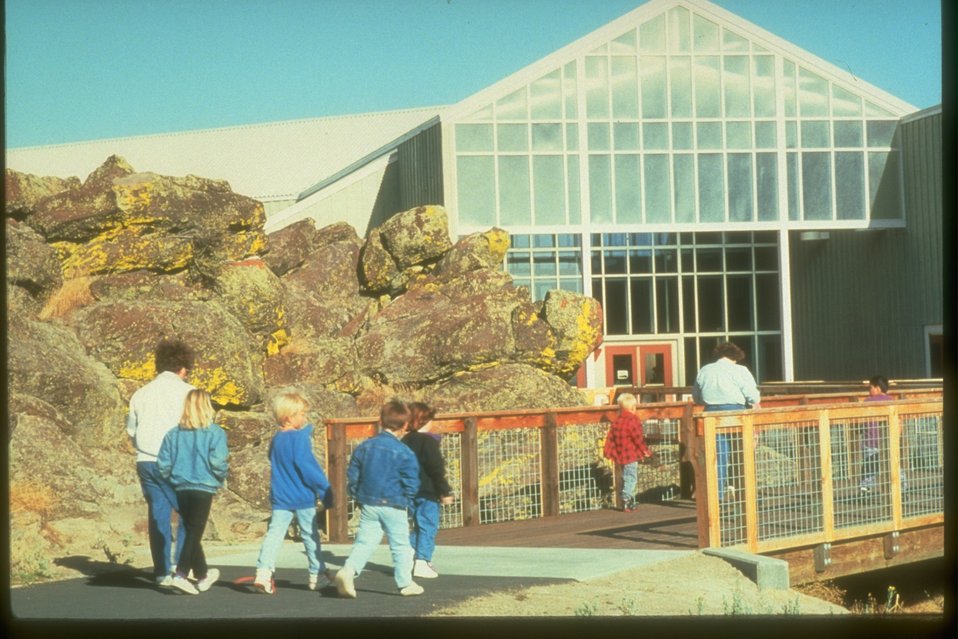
Visitors walking into the entrance of the Interpretive Center building.